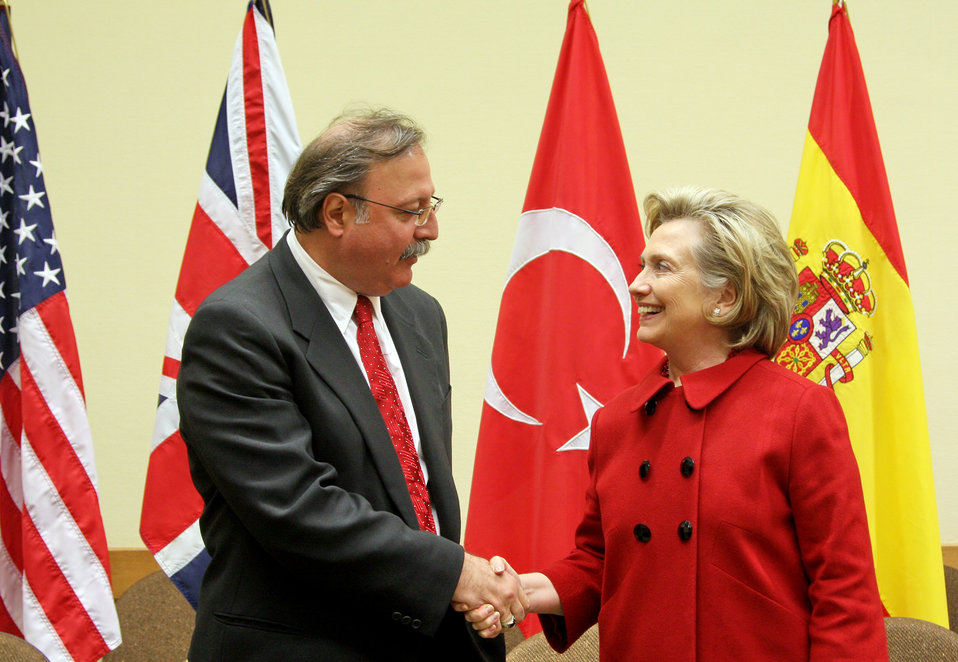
Secretary Clinton Meets With Georgian Foreign Minister

U.S. Secretary of State Hillary Rodham Clinton participates in a bilateral meeting with Spanish Foreign Minister Miguel Angel Moratinos in Brussels, Belgium December 4, 2009.